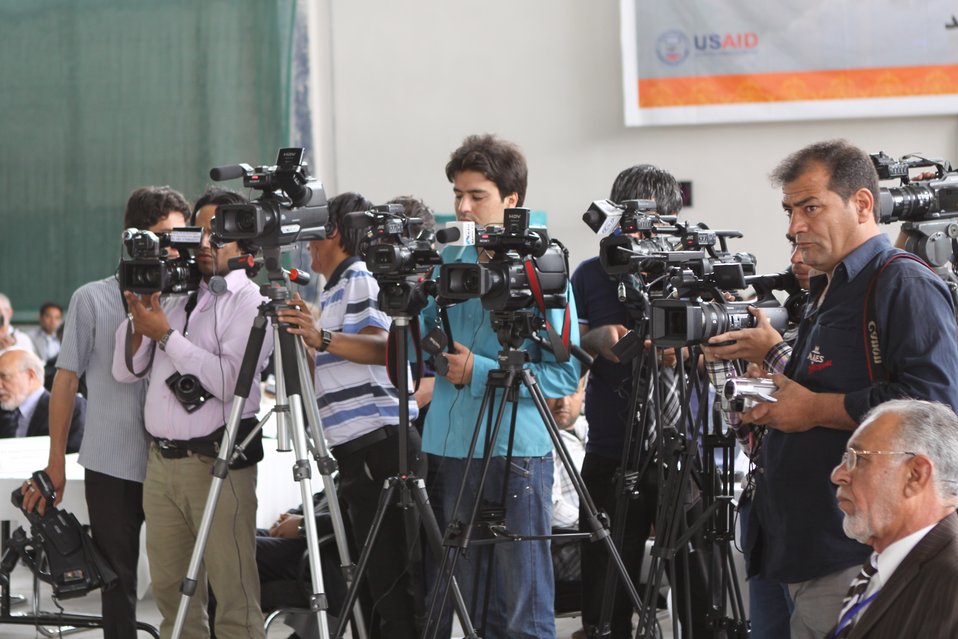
100525 Hirat Marble Conference 181